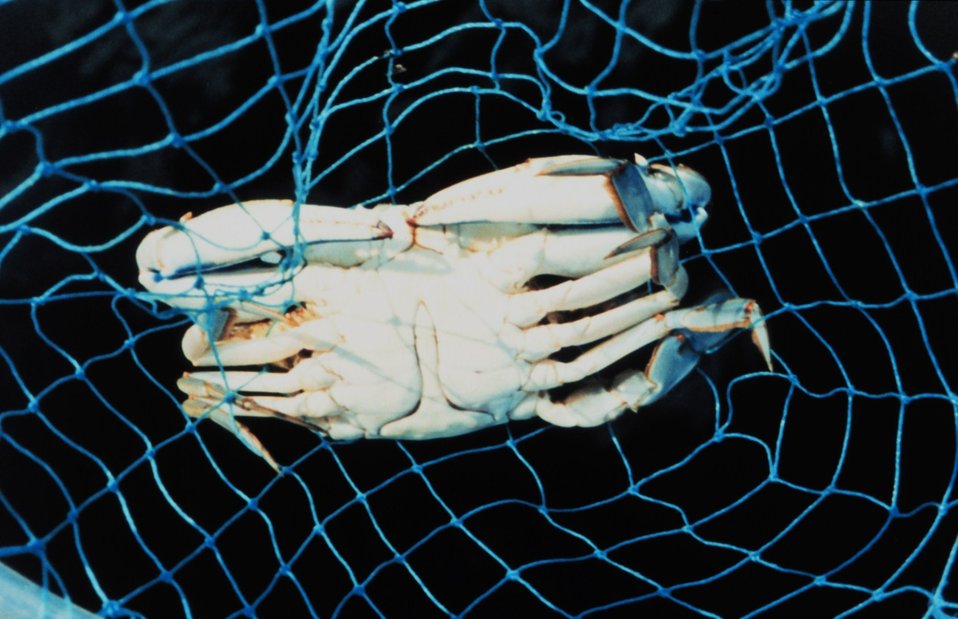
The sex of a blue crab is determined by the shape of the 'apron'. The male apron, shown here, is shaped like a rocket. Females have either a 'V' shape (immature) or a very wide apron with a small tip (mature.)